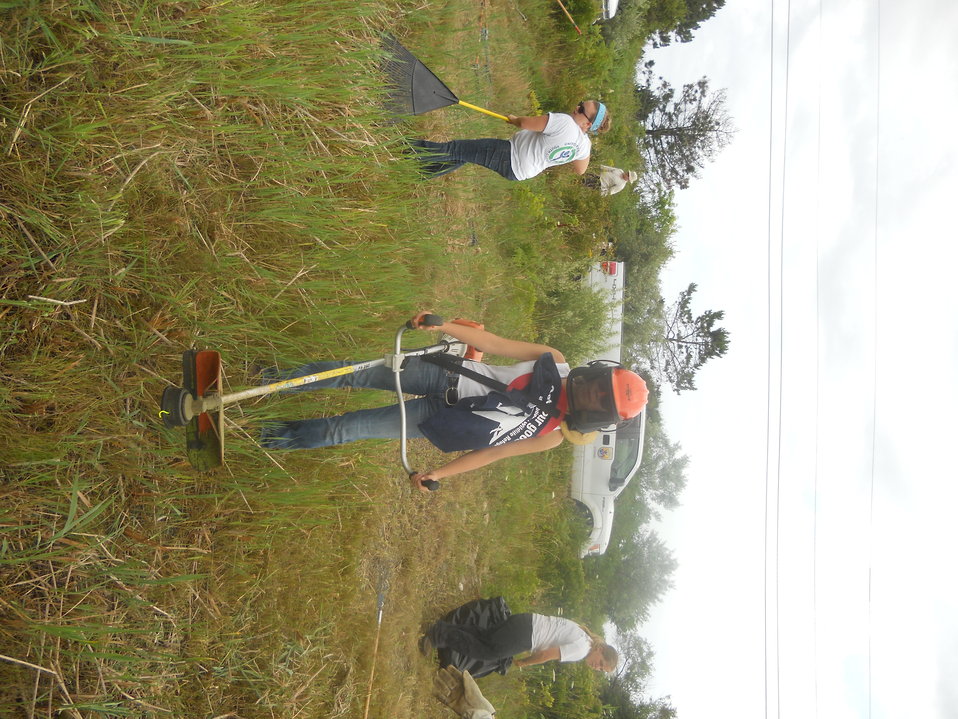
Get Your Goose On!

USFWS employee Katie Titherington doing some Phrag cutting.